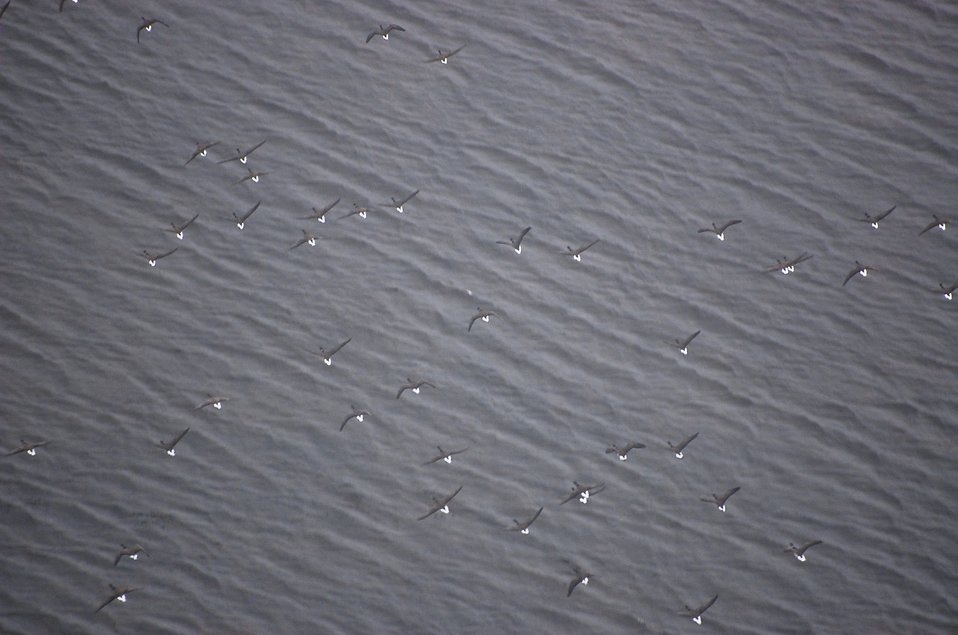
Brant at Izembek Lagoon

Izembek National Wildlife Refuge